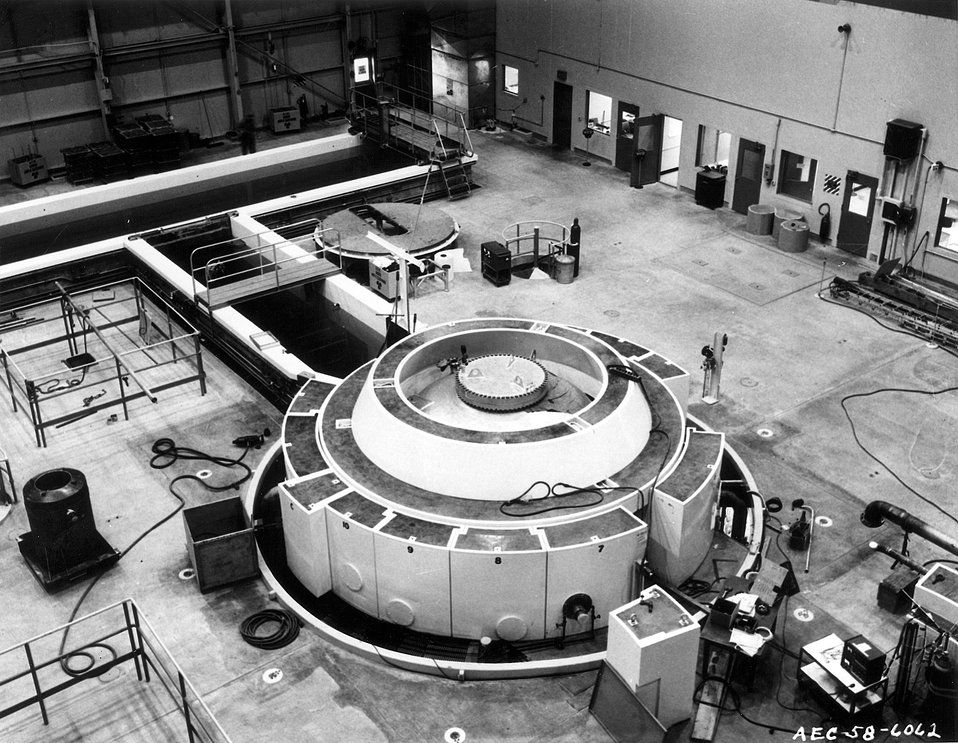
National Reactor Testing Station, Idaho... The Engineering Test Reactor (ETR), at the National Reactor Testing Station is being built by the Phillips Petroleum Company. Circa 1958.